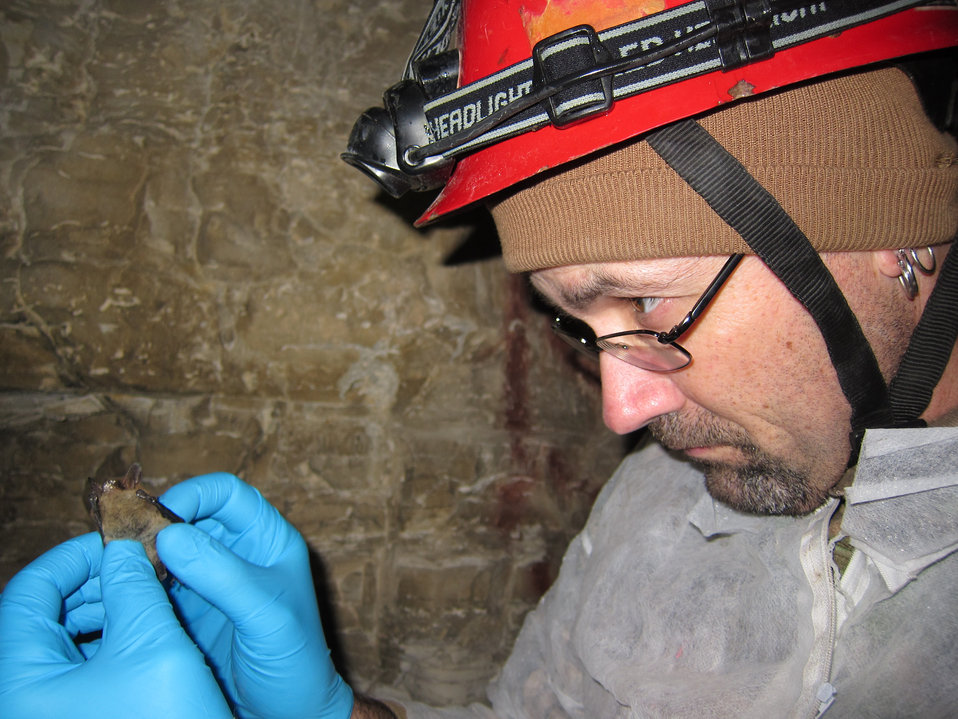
Biologist inspects northern long-eared bat with visible symptoms of WNS

Joe Kath (Illinois Department of Natural Resources Endangered Species Manager/Bat Specialist) examines a Myotis septentrionalis, northern myotis (Vespertilionidae) with growth of Geomyces destructans clearly evident. LaSalle County, Illinois. January 2013